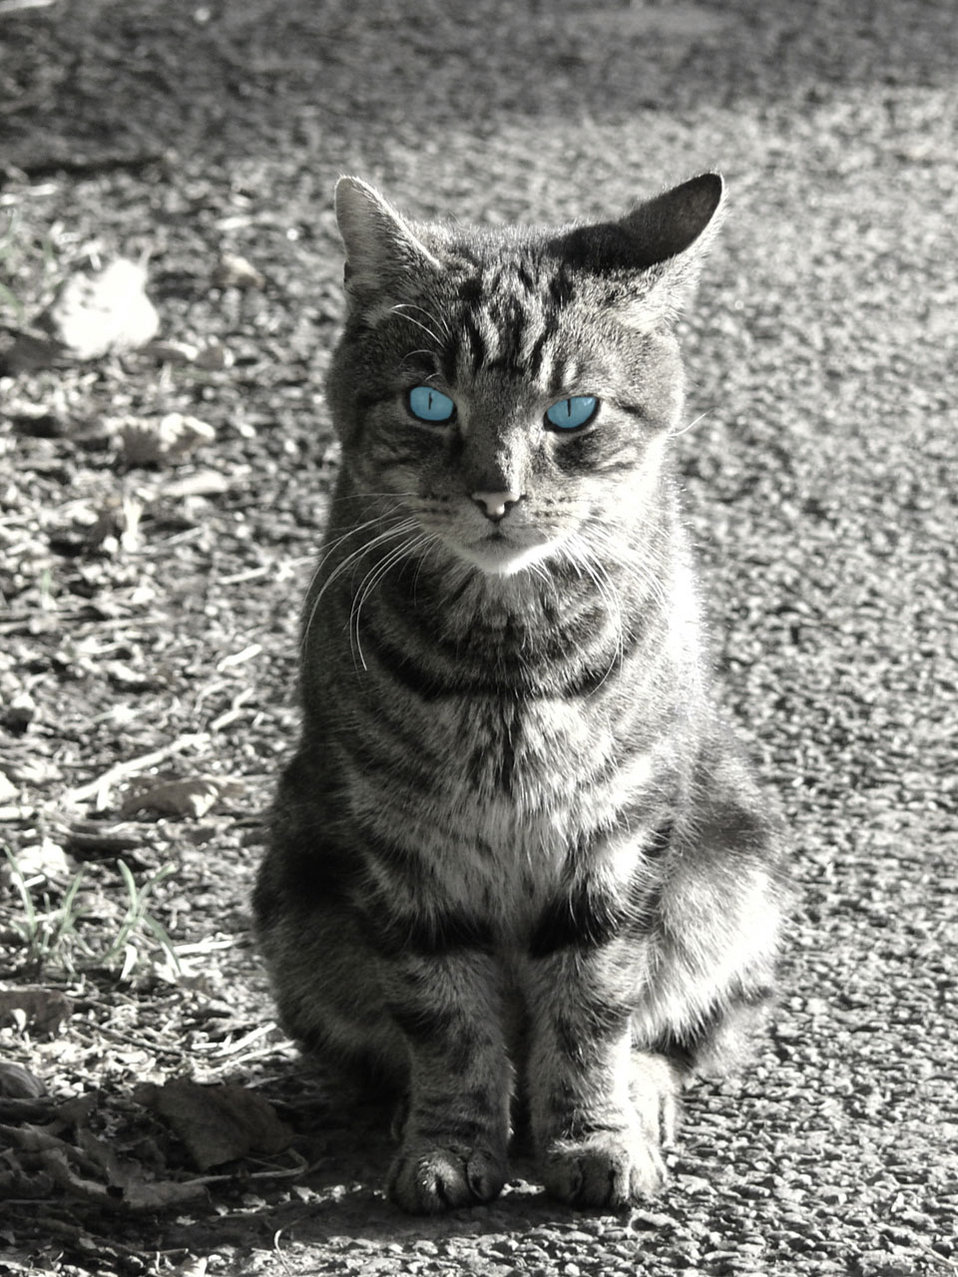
Cat

A black and white cat.